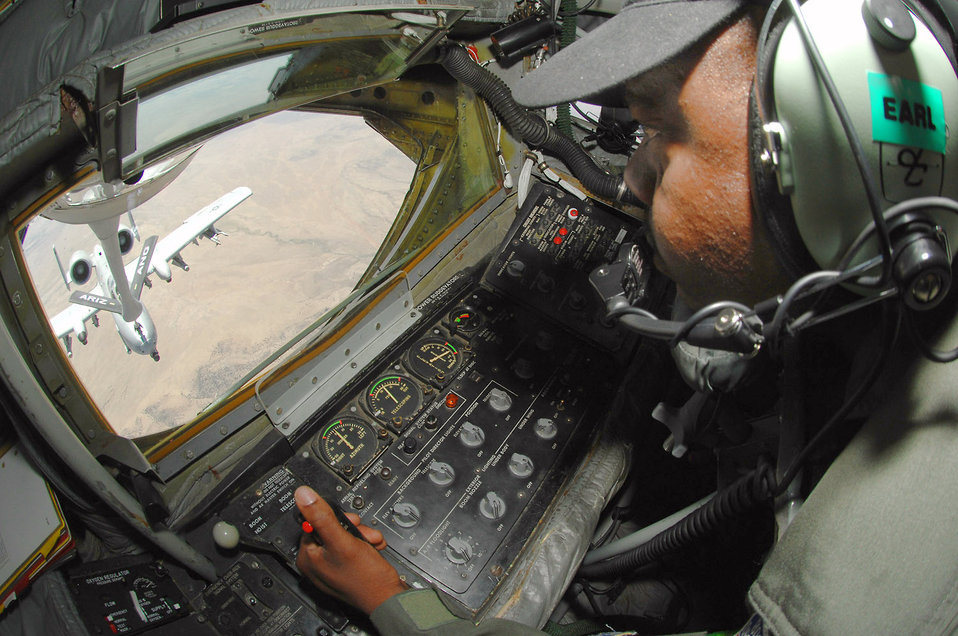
Soaring over Arizona

Master Sgt. Vincent Jones, a KC-135 Stratotanker boom operator with the Arizona Air National Guard's 161st Air Refueling Wing based in Phoenix, refuels an A-10 Thunderbolt II April 29 from the 355th Fighter Wing at Davis Monthan Air Force Base, Ariz.